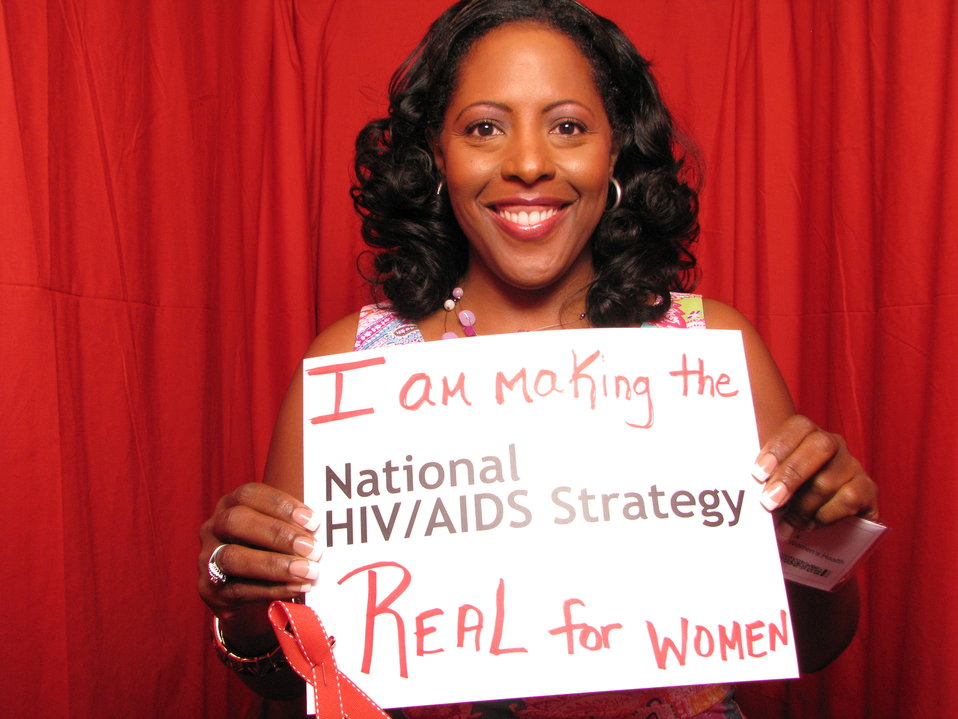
I am making the National HIV/AIDS Strategy Real for Women

From the AIDS.gov photo booth at the U.S. Conference on AIDS, September 2010 (Orlando, FL).